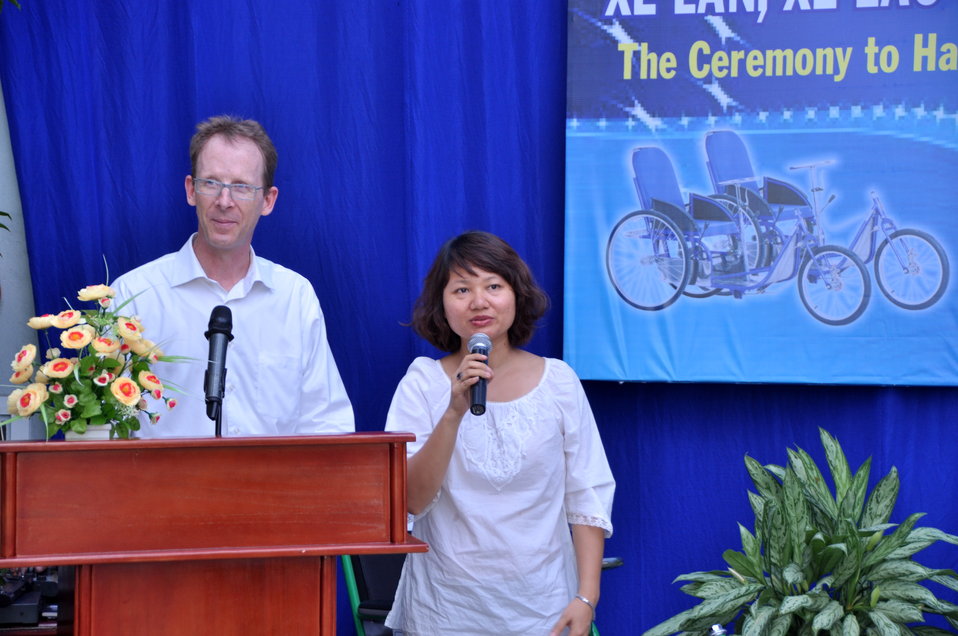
USAID Project Supports Rehabilitation Department for Children and Wheelchair Distribution in Danang

USAID Mission Director Joakim Parker speaks at the handover ceremony.